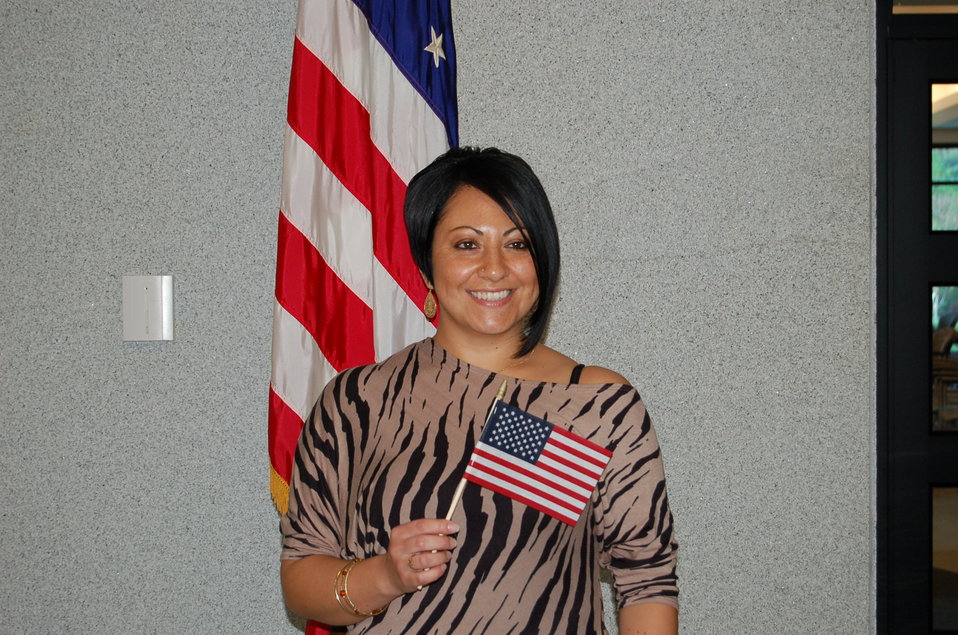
New Citizens